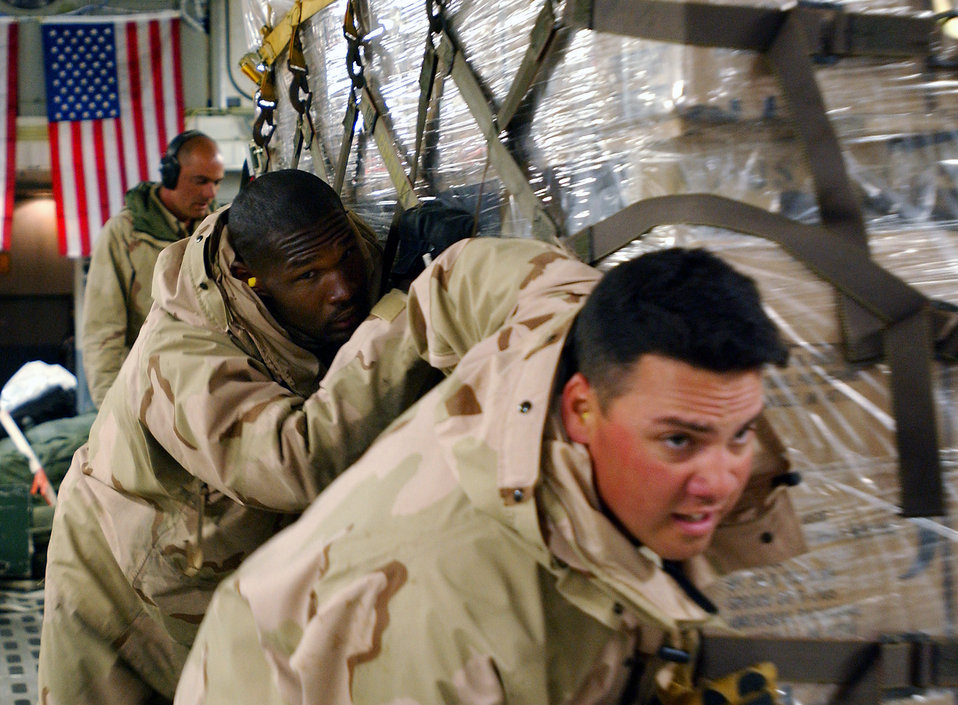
Rushing aid to people

BASHUR AIRFIELD, Northern Iraq (USAFENS) -- Airman 1st Class Justin Tatem and Staff Sgt. Hector Nieves, 86th Expeditionary Contingency Response Group, unload the first shipment of humanitarian daily rations to arrive here from the United States April 16 in support of Operation Iraqi Freedom.